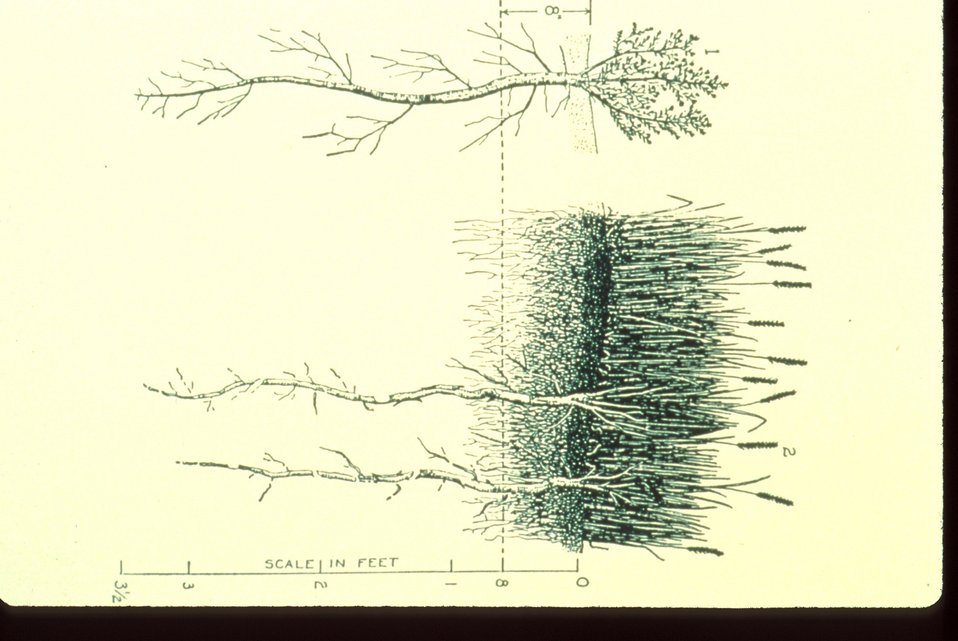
Yellowstar Thistle roots noxious Weed